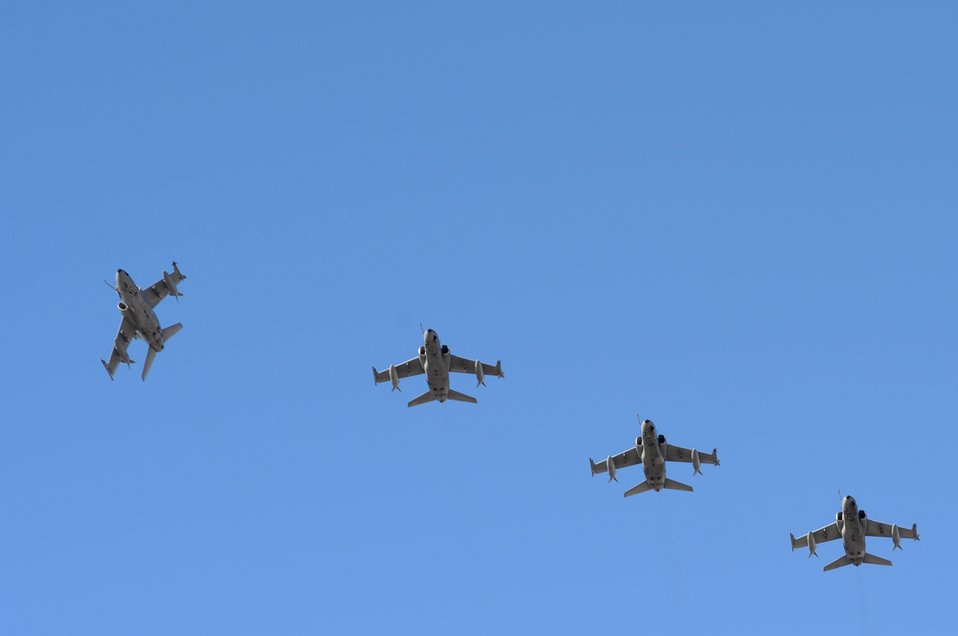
Red Flag trains combat air forces

An Italian Air Force AMX fighter breaks formation for landing after a Red Flag training mission Aug. 26, 2009 at Nellis Air Force Base, Nev. The two-week exercise is administered through the 414th Combat Training Squadron at Nellis AFB and is just one in a series of advanced training programs offered by the U.S. Air Force Warfare Center. U.S. Air Force, Navy and Marines Corps units are participating in Red Flag 09-5 along with allied forces from Italy and the United Arab Emirates.